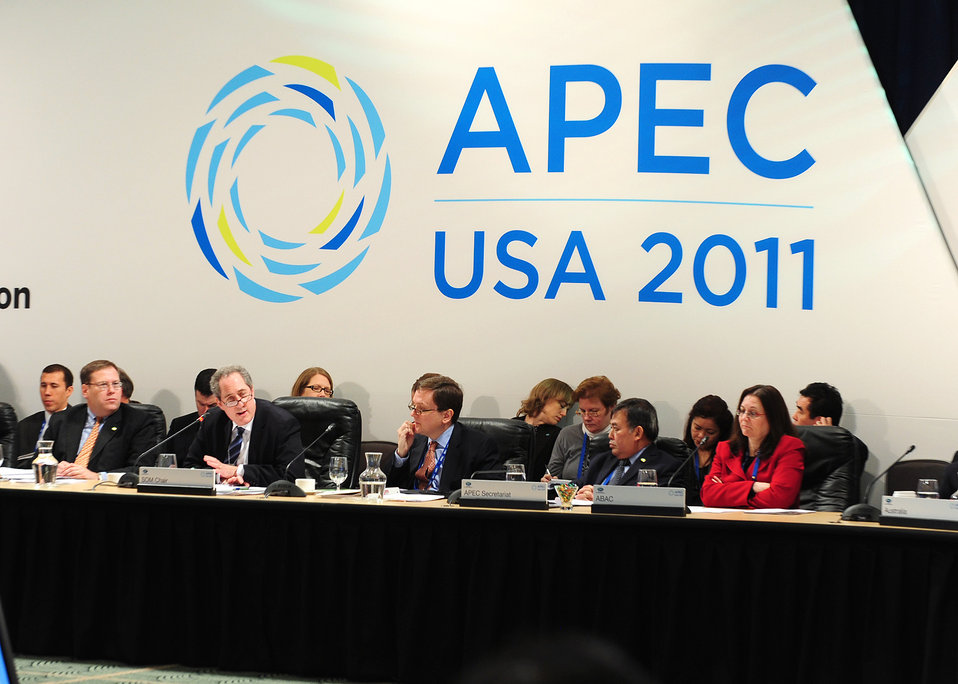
Chair Froman Delivers Remarks

Chair Michael Froman delivers remarks at the open plenary of the Asia Pacific Economic Cooperation (APEC) Senior Officials Meeting (SOM1) in Washington, D.C., on March 11, 2011.